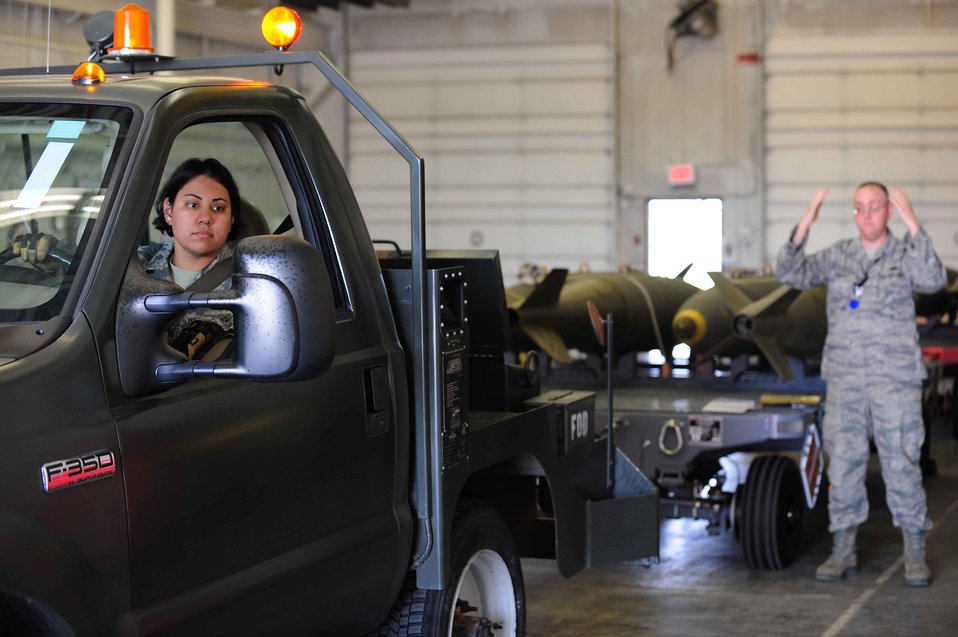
Warehousing the Mark 84 bomb

Senior Airman Jennifer Peterson and Staff Sgt. Jeremiah Phelps align two trailers of Mark 84 bombs April 21, 2010, Ellsworth Air Force Base, S.D. Both Airmen are assigned to the 28th Munitions Squadron as conventional maintenance crew chiefs.